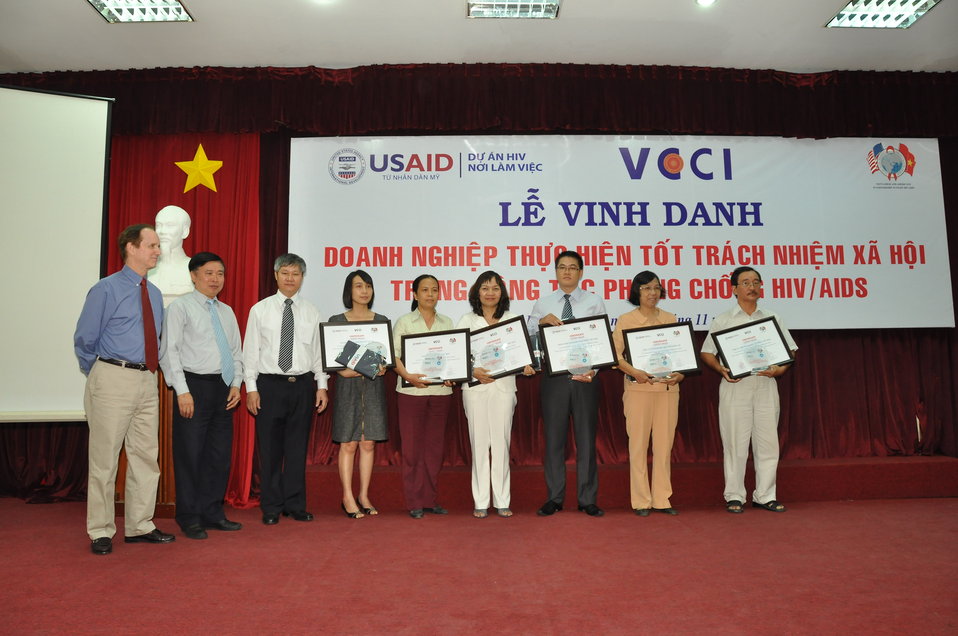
USAID and VCCI present certificates to enterprises active in HIV awareness and support

Award ceremony in Ho Chi Minh City on November 16, 2011